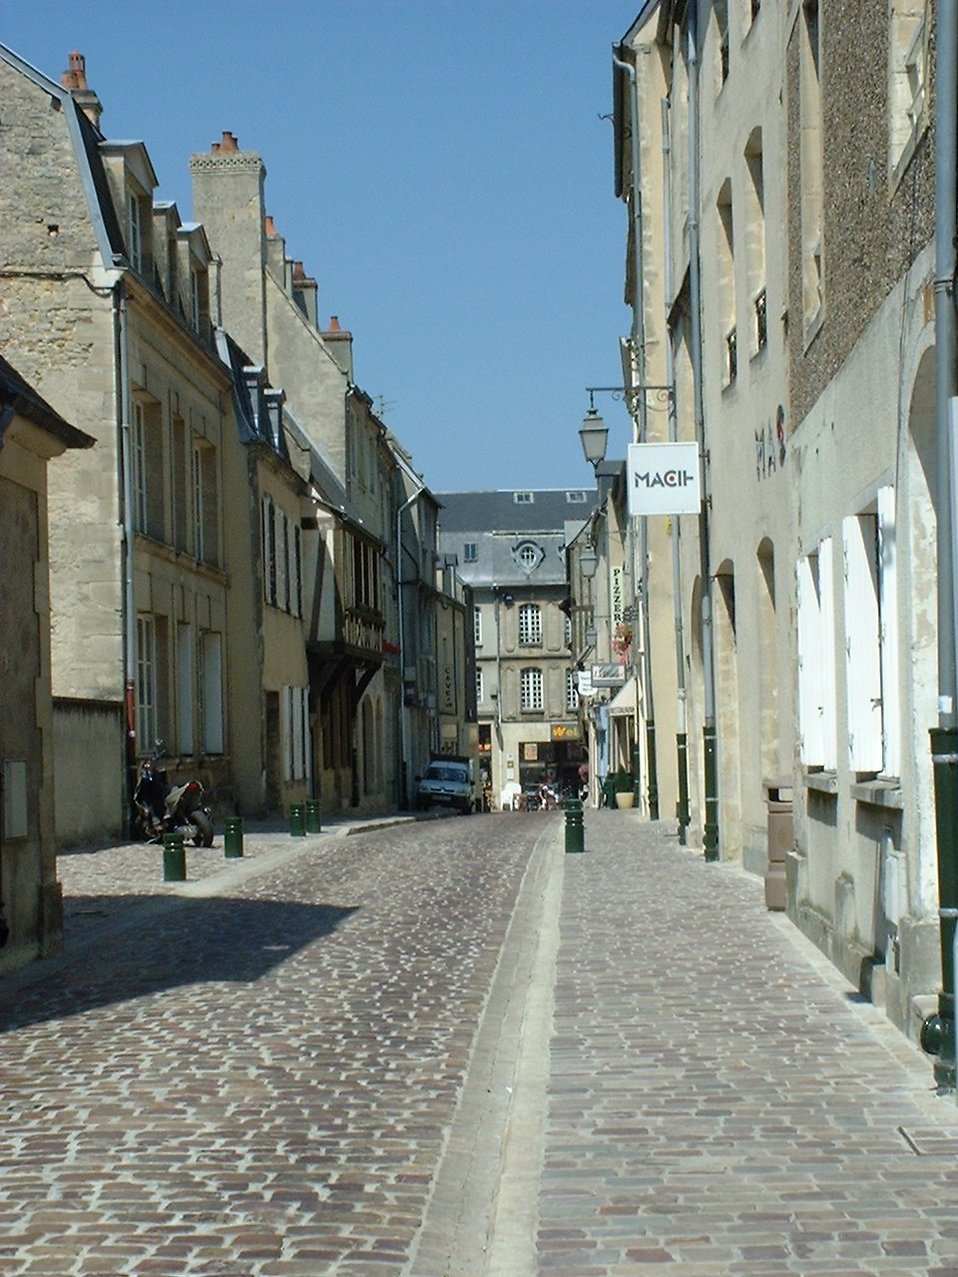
Photo Streets of Bayeux, France taken on July 3, 2001.